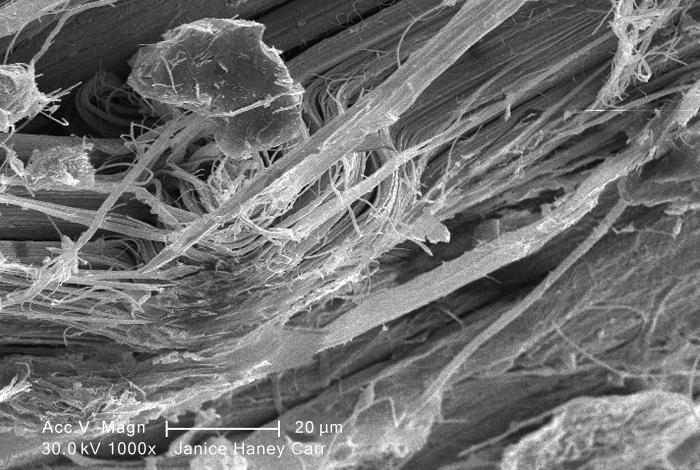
Under a moderate magnification of 1000X, this scanning electron micrograph (SEM) revealed some of the microcrystalline ultrastructure exhibited by a piece of raw chrysotile, or white asbestos, which had been excavated from the Lowell Asbestos Mine on Belvidere Mountain, Vermont.